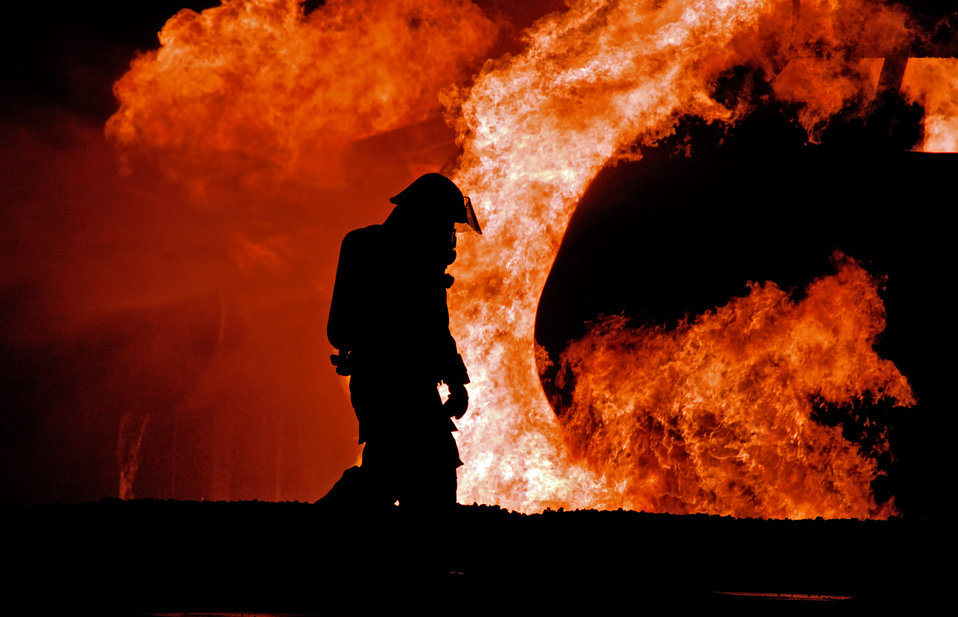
Into the fire

A firefighter from the 35th Civil Engineer Squadron works to put out a blaze on an aircraft fire trainer during Fire Prevention Week Oct. 9 at Misawa Air Base, Japan. The 35th CES firefighters annually demonstrate firefighting procedures for base residents.